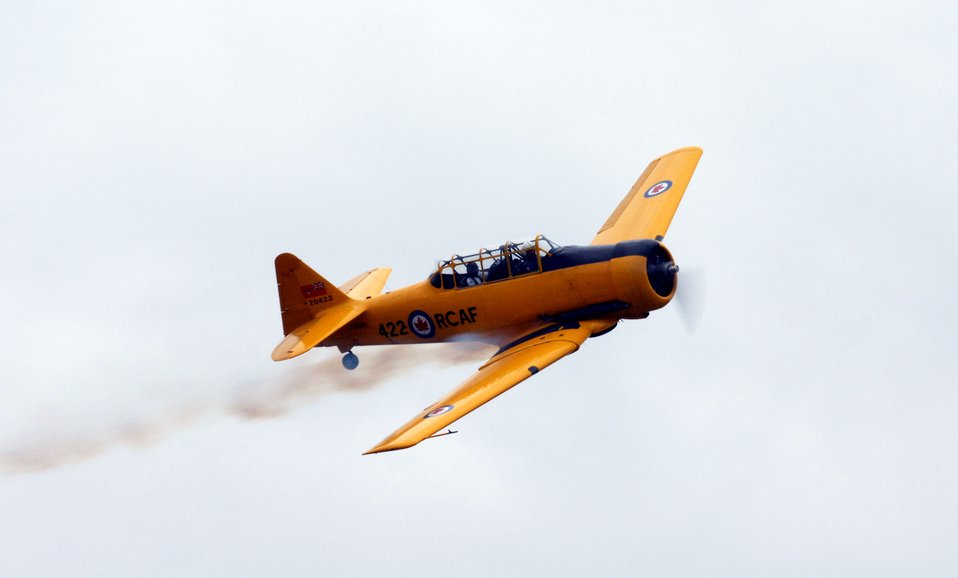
Remembering the Tuskegee Airmen

A T-6A Texan II flies over Moton Field during the grand opening of the Tuskegee Airmen National Historic Site Oct. 11 in Tuskegee, Ala. Moton Field in the 1940s was the only primary flight training facility for the first African American pilot candidates in the Army Air Corps, these pilots are known as the Tuskegee Airmen.